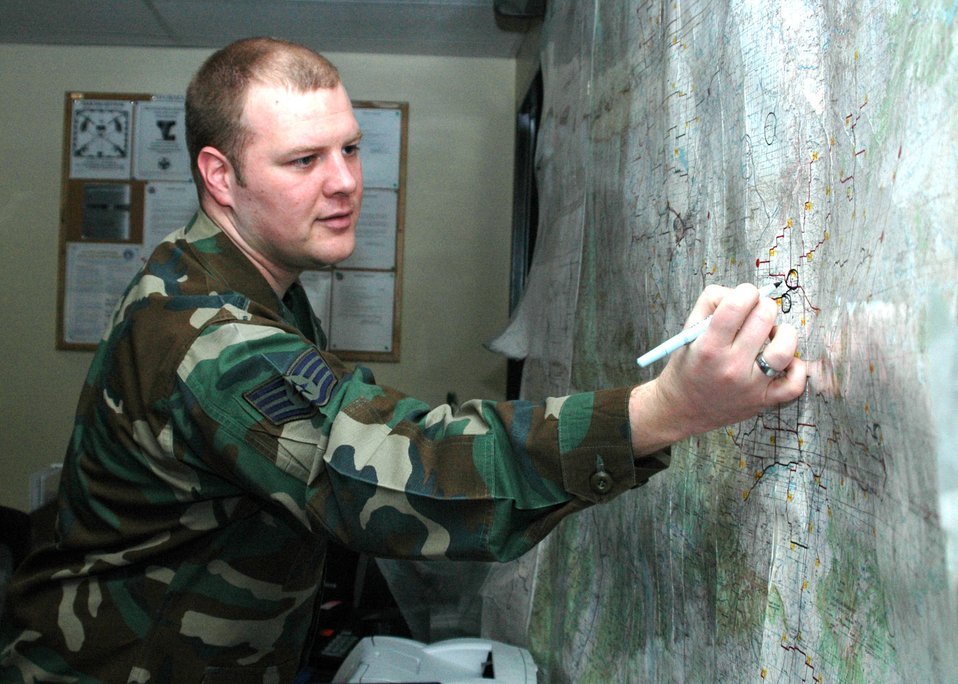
Serving through the season: Staff Sgt. Charles Gillman

Staff Sgt. Charles Gillman plots movement of security forces and maintenance vehicles within the 25,000-square-mile missile complex while on duty at the Missile Security Control Center at Malmstrom Air Force Base, Mont.